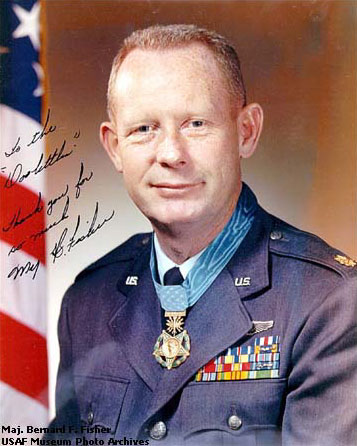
Maj. Bernard F. Fisher

Medal of Honor recipient, Maj. Bernard Fisher, autographed this photo for Jimmy Doolitte.